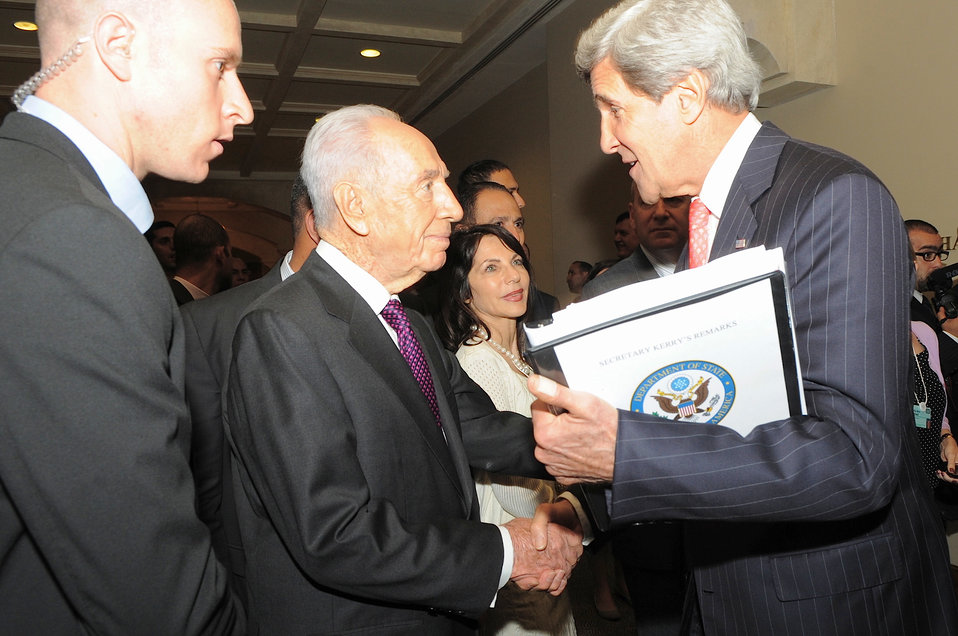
Secretary Kerry Attends World Economic Forum

U.S. Secretary of State John Kerry greets Israeli President Shimon Peres as the two attend the World Economic Forum in Dead Sea, Jordan, on May 26, 2013.